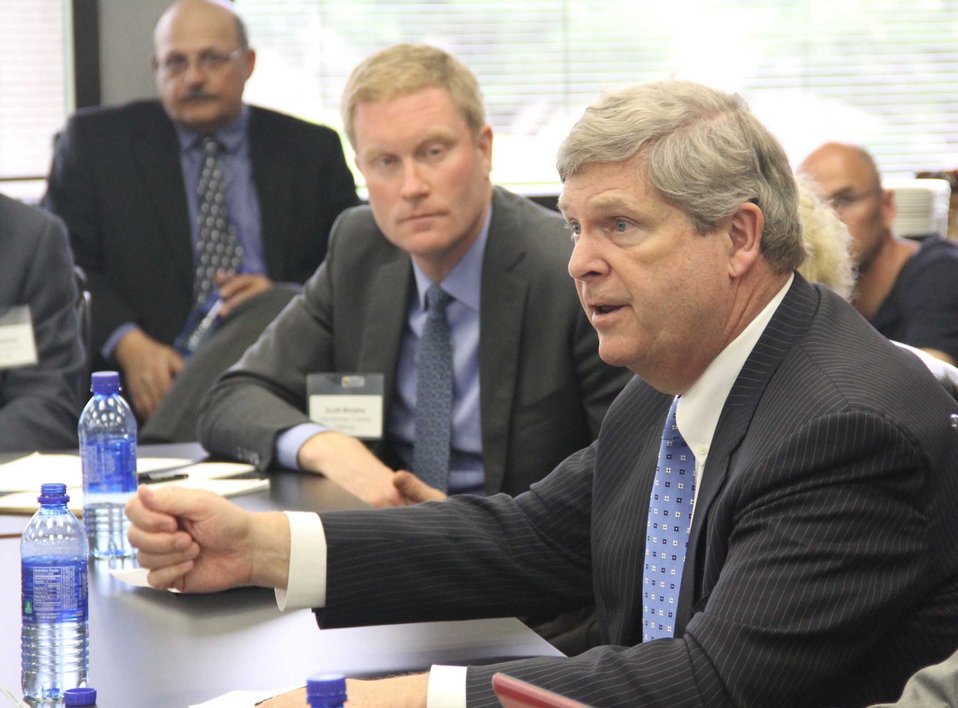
Agriculture Secretary Tom Vilsack announces the creation of a new investment fund that will help propel the growth of small businesses across rural America during a roundtable discussion with lenders and community leaders in Cedar Rapids, IA on Apr. 21, 2014. The new Rural Business Investment Company (RBIC) will be managed by Advantage Capital Partners with partners from eight Farm Credit institutions.